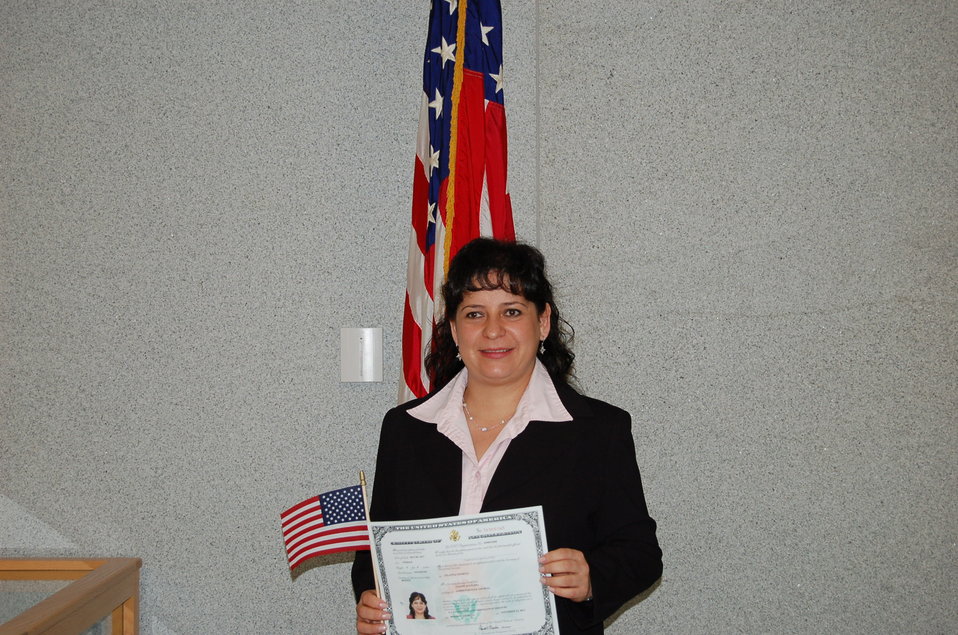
New Citizens